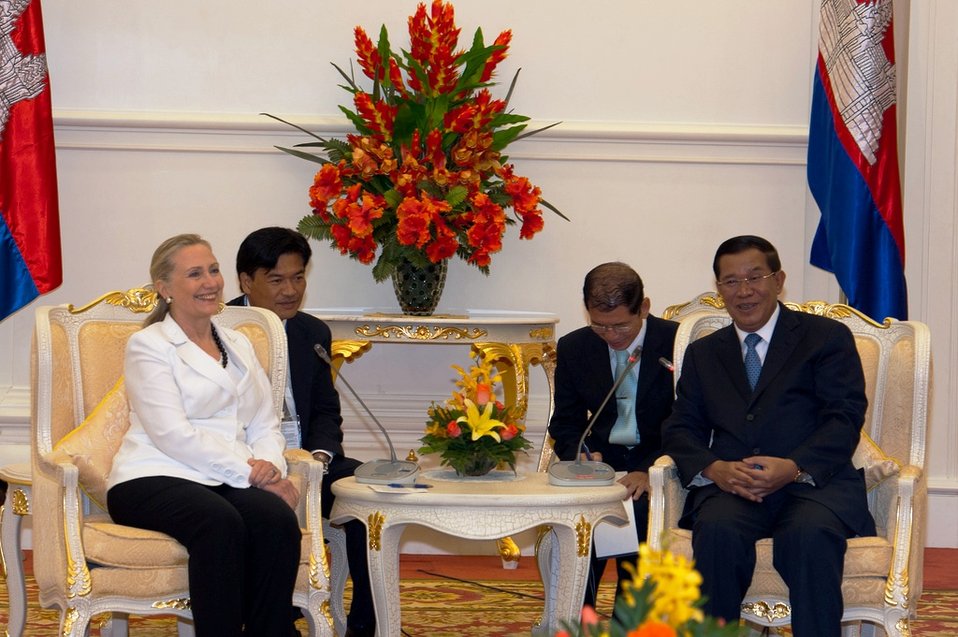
Secretary Clinton Meets With Cambodian Prime Minister Hun Sen

U.S. Secretary of State Hillary Rodham Clinton meets with Cambodian Prime Minister Hun Sen in Phnom Penh, Cambodia, on July 11, 2012.